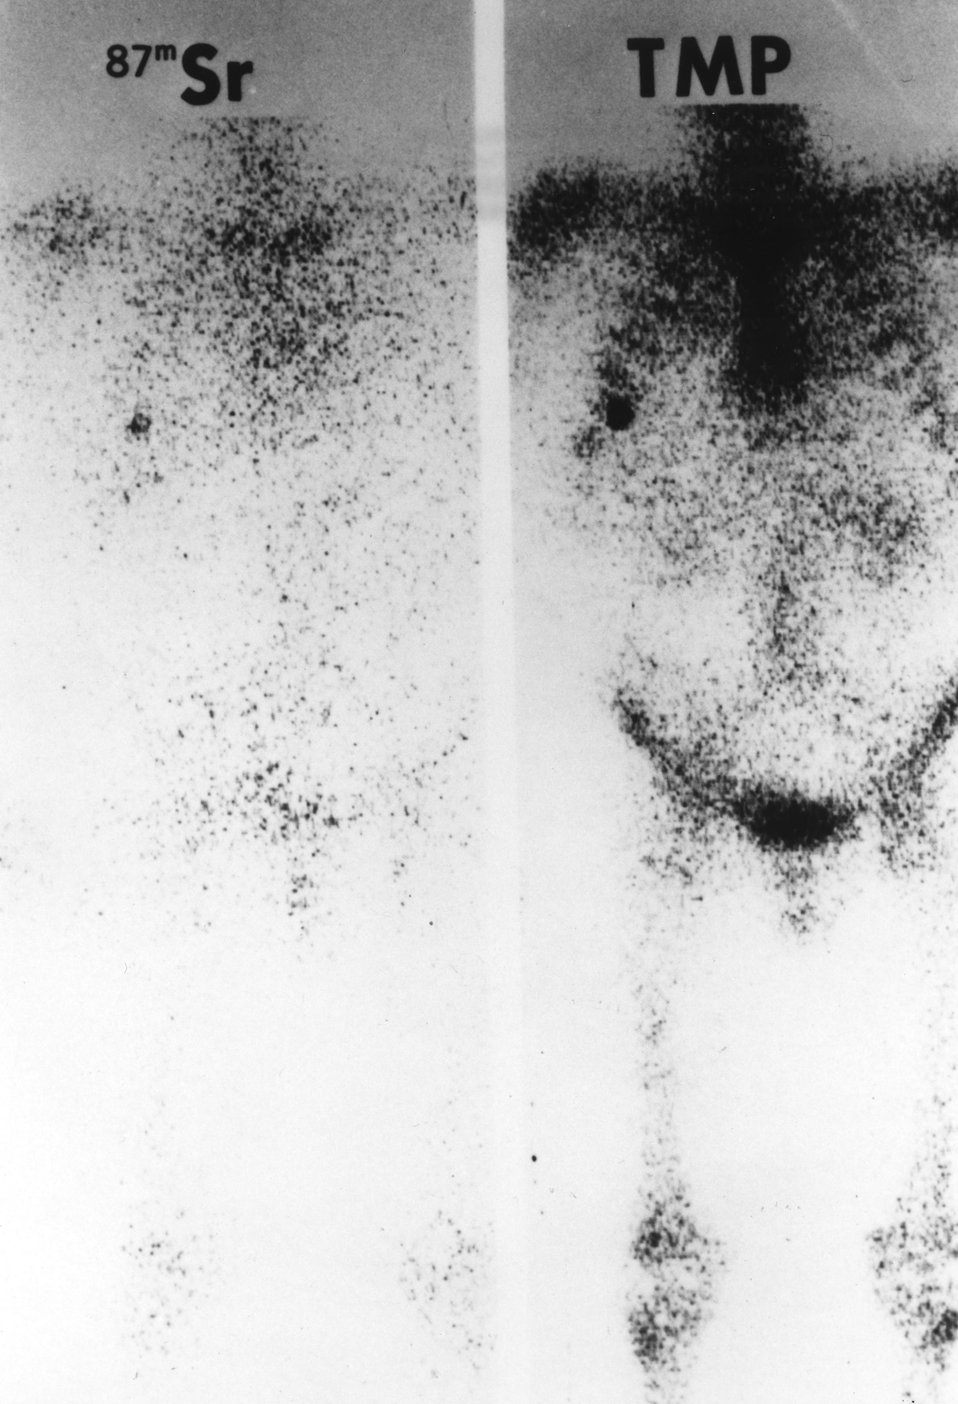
Comparison shows the skeleton imaging ability of stronium-87m as against the new technetium-99m stannous palphosphate (at right) which was licensed for medical diagnostic use during 1973.